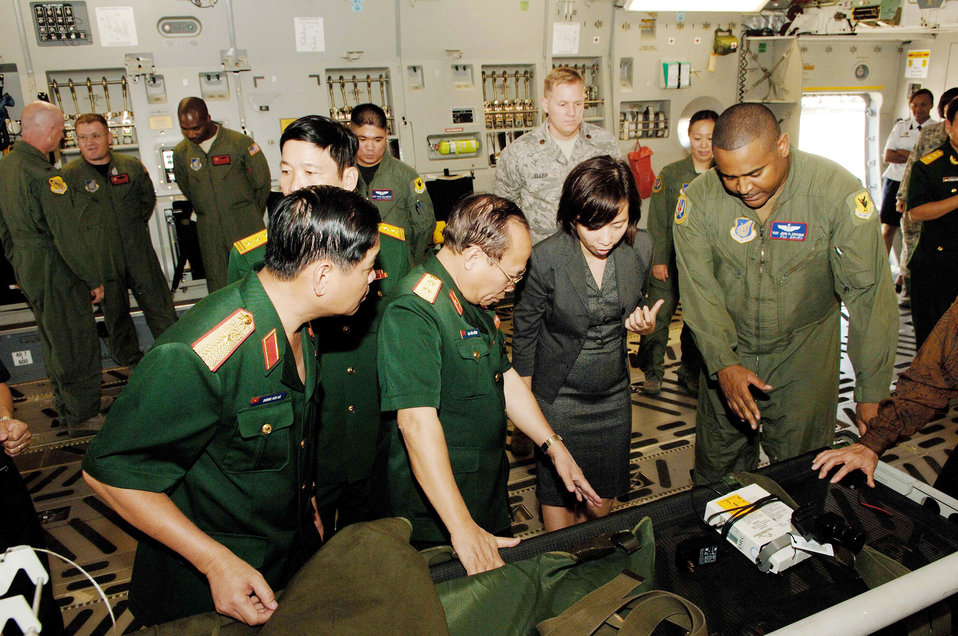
Vietnam military health, logistics reps visit Hickam

Tech. Sgt. John Stevens talks with Vietnam military delegates during a tour of a C-17 Globemaster III at Hickam Air Force Base, Hawaii, Nov. 10, 2009. Six delegates from the Vietnam military health and general logistics fields met with U.S. Air Force officials at Hickam during a 13th Air Force-hosted visit. The delegates learned how the U.S. military conducts surveillance, screening and testing of infectious diseases, and how the U.S. Air Force plans and conducts logistics operations. Sergeant Stevens is the NCO in charge of aircrew scheduling in the 18th Aerospace Medicine Squadron at Kadena Air Base, Japan.